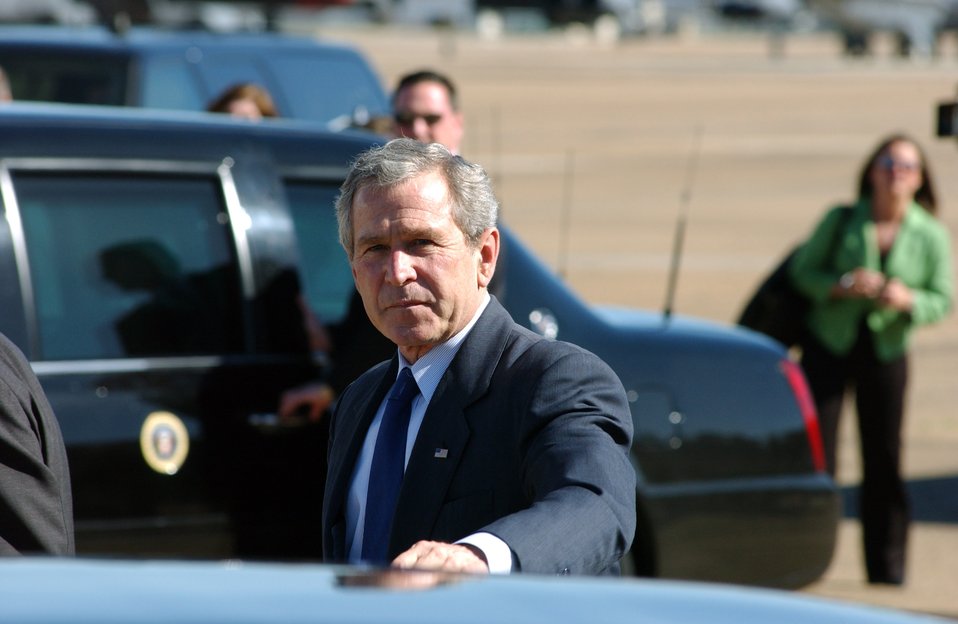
Bush breezes through Barksdale

BARKSDALE AIR FORCE BASE, La. -- President George W. Bush makes his way to Air Force One after greeting Airmen here. President Bush had just returned from a town hall meeting in nearby Shreveport on March 11.